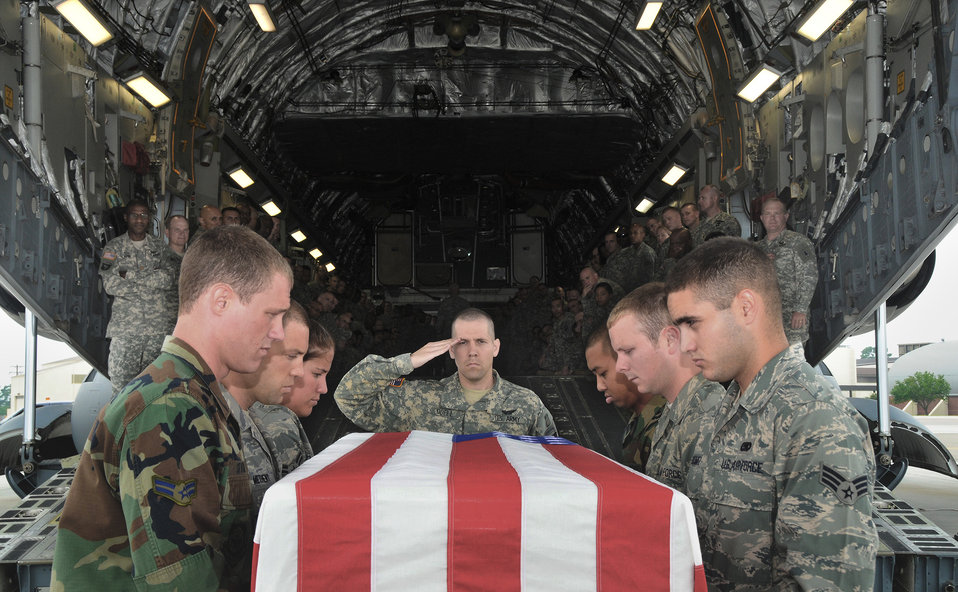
Charleston officials provide dignified transfer training for Army chaplains

Army Chap. (Capt.) Joseph Odell salutes as a U.S. flag draped transfer case is prepared to be carried aboard a C-17 Globemaster III by Charleston Air Force Base honor guard members on the flightline during training for dignified transfers of human remains July 14 at Charleston AFB, S.C. More than 170 Army chaplain candidates traveled to Charleston AFB from Fort Jackson, S.C., to take part in the the training. Chaplain Odell is the class leader for Chaplain Basic Officer Leader Course Class 09-002.